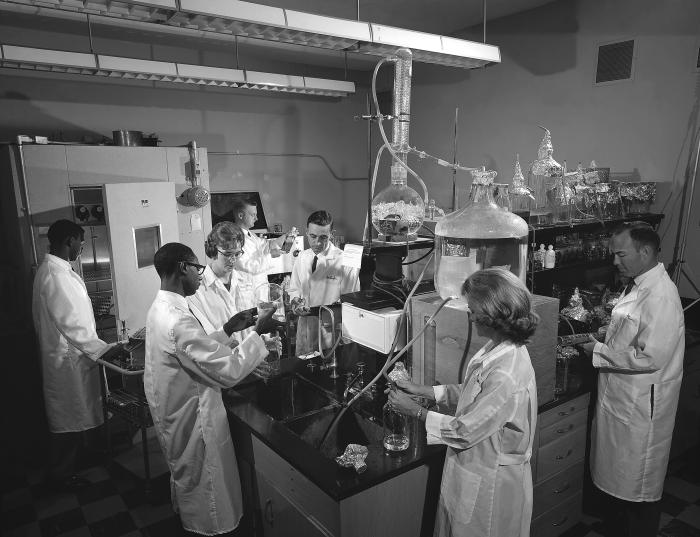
This historic image created in 1964, depicted laboratory technicians in one of the Centers for Disease Control's tissue-culture media rooms, carrying out standard laboratory practices. In this particular image you'll note a communal water still, as well as a small incubator.